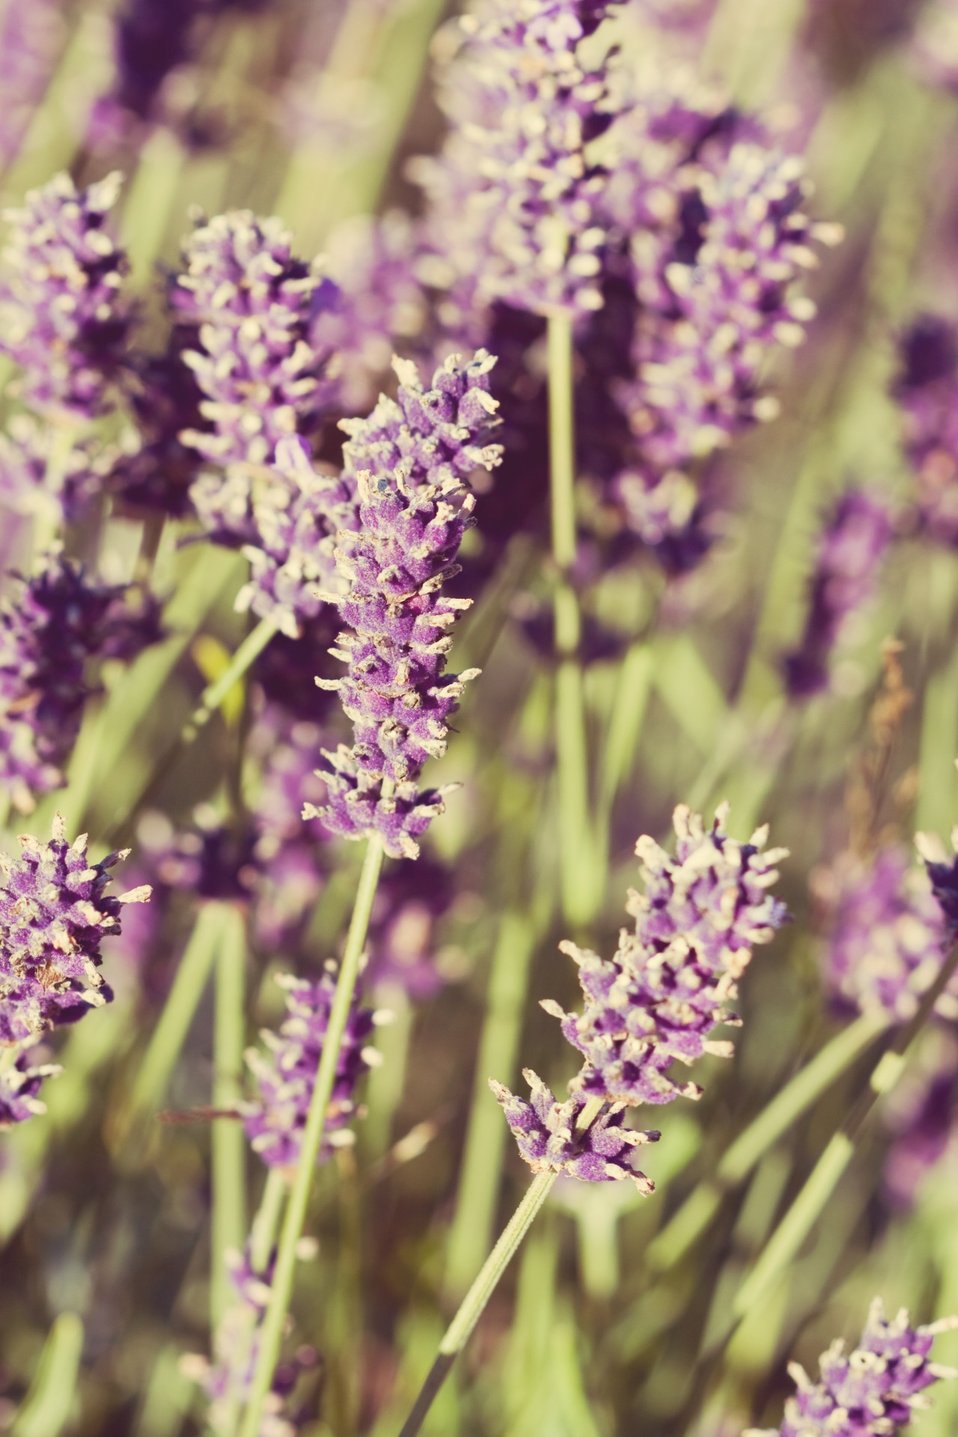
Lavender flowers vintage look

Beautiful lavender flowers in the vintage style.